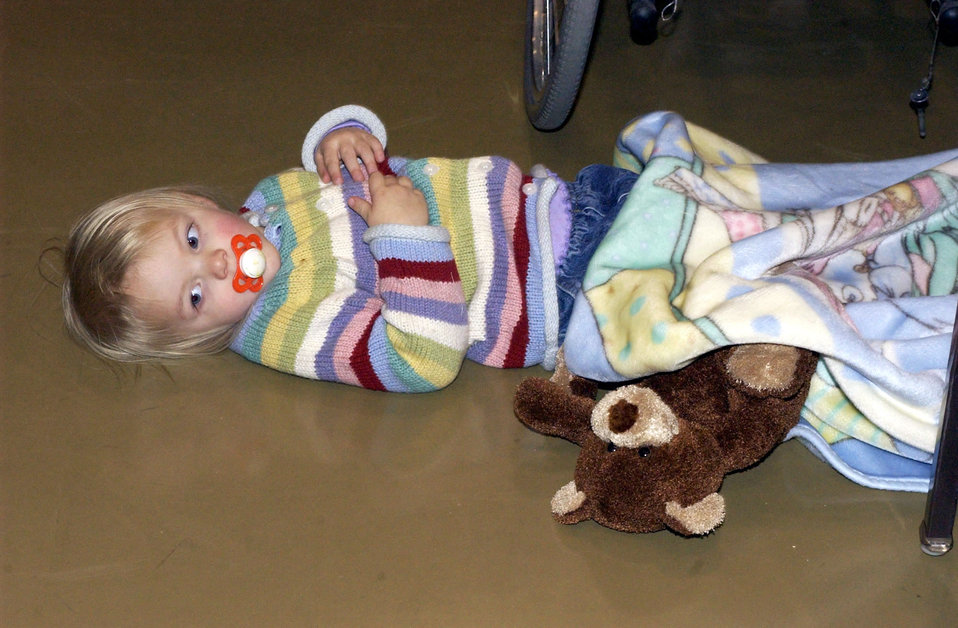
Finding comfort in Guardian Bear

ROSEMONT, Minn. -- The young daughter of a Minnesota National Guard member shares her blanket with her new Guardian Bear. More than 1,000 Guardian Bears have been handed out in 2003. The bears, which are free to Minnesota Guard members, are purchased through donations given to the National Guard Foundation.